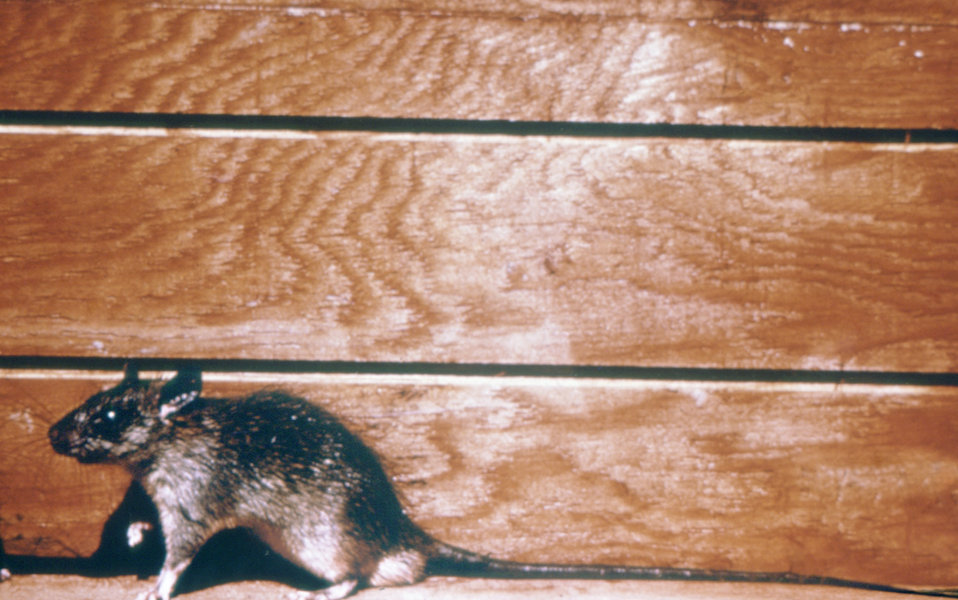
This image shows the roof rat or black rat, Rattus rattus, a carrier of the plague bacterium, Yersinia pestis.